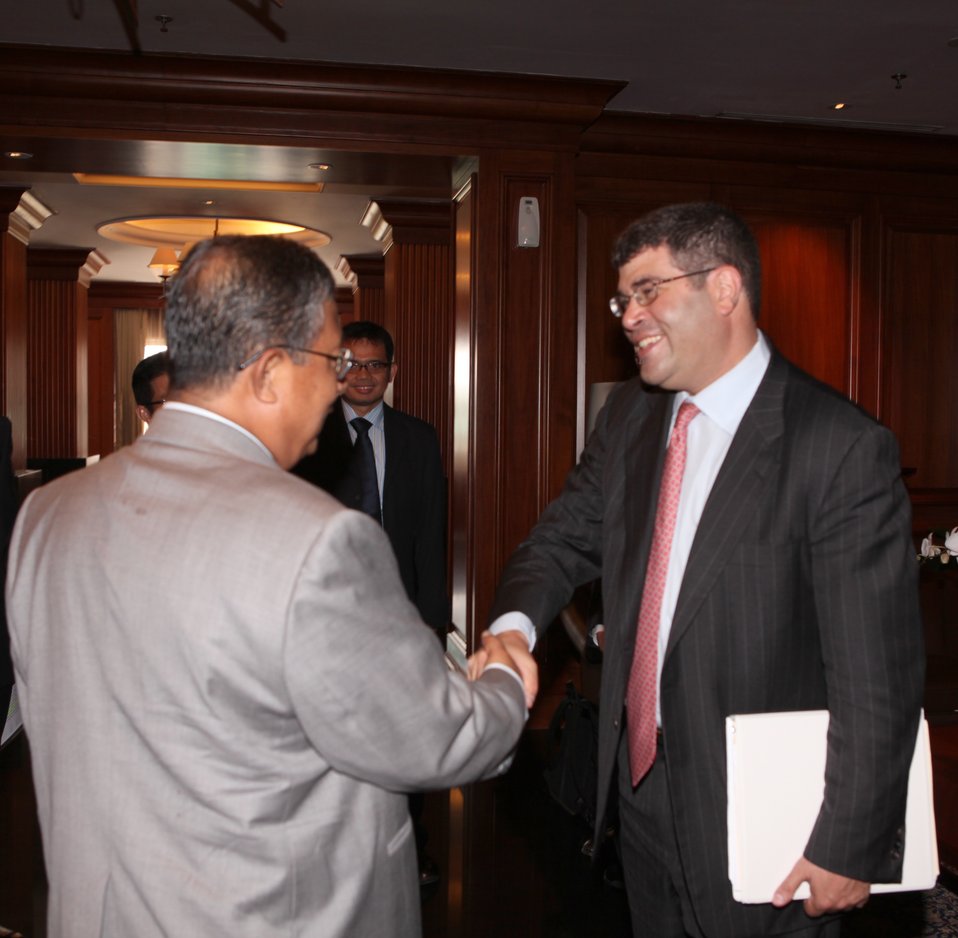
Deputy Secretary Wolin's Trip to the Pacific Rim

Deputy Secretary Neal Wolin being greeted at Bank Indonesia by Indonesia's Central Bank Governor Darmin Nasution.